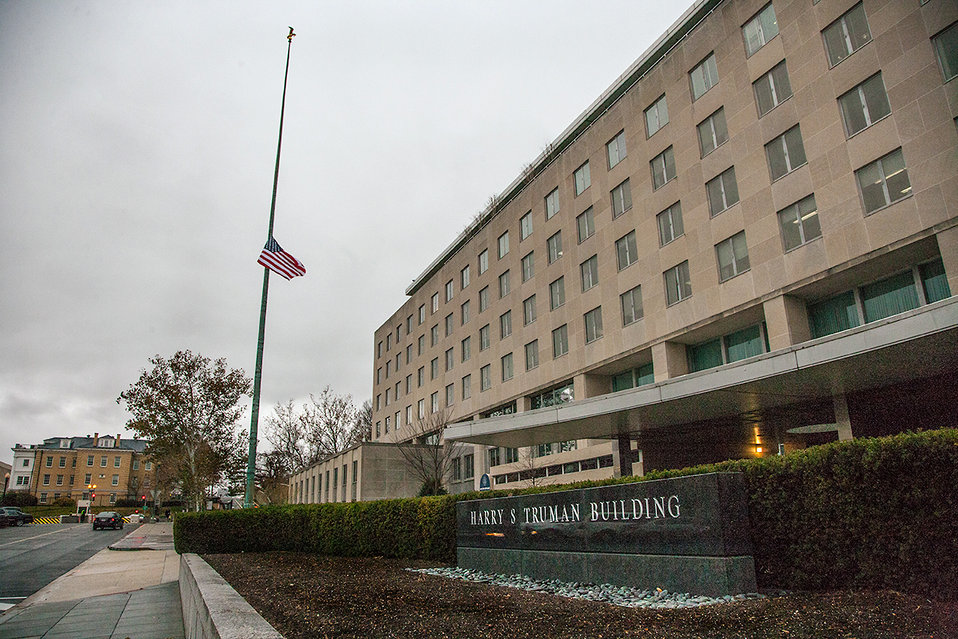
The State Department's Flag Flies at Half-Staff in Honor of Former South African President Mandela

The American flag at the U.S. Department of State flies at half-staff in honor of former South African President Nelson Mandela, on December 6, 2013. As a mark of respect for the memory of Nelson Mandela, President Obama ordered that the flag of the United States shall be flown at half-staff at the White House and upon all public buildings and grounds, at all military posts and naval stations, and on all naval vessels of the Federal Government in the District of Columbia and throughout the United States and its Territories and possessions until sunset, December 9, 2013.